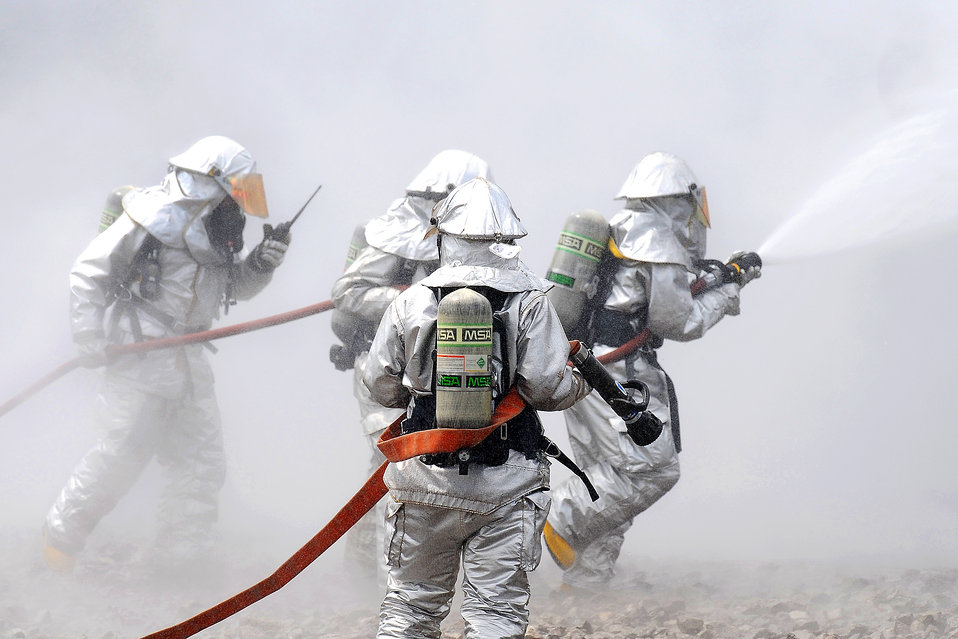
Guard firefighters train for emergencies

Firefighters battle the smoke during a live fire response exercise July 21, 2010, at the Combat Readiness Training Center in Alpena, Mich. The firefighters are with the Michigan Air National Guard's 127th Wing at Selfridge Air National Base.